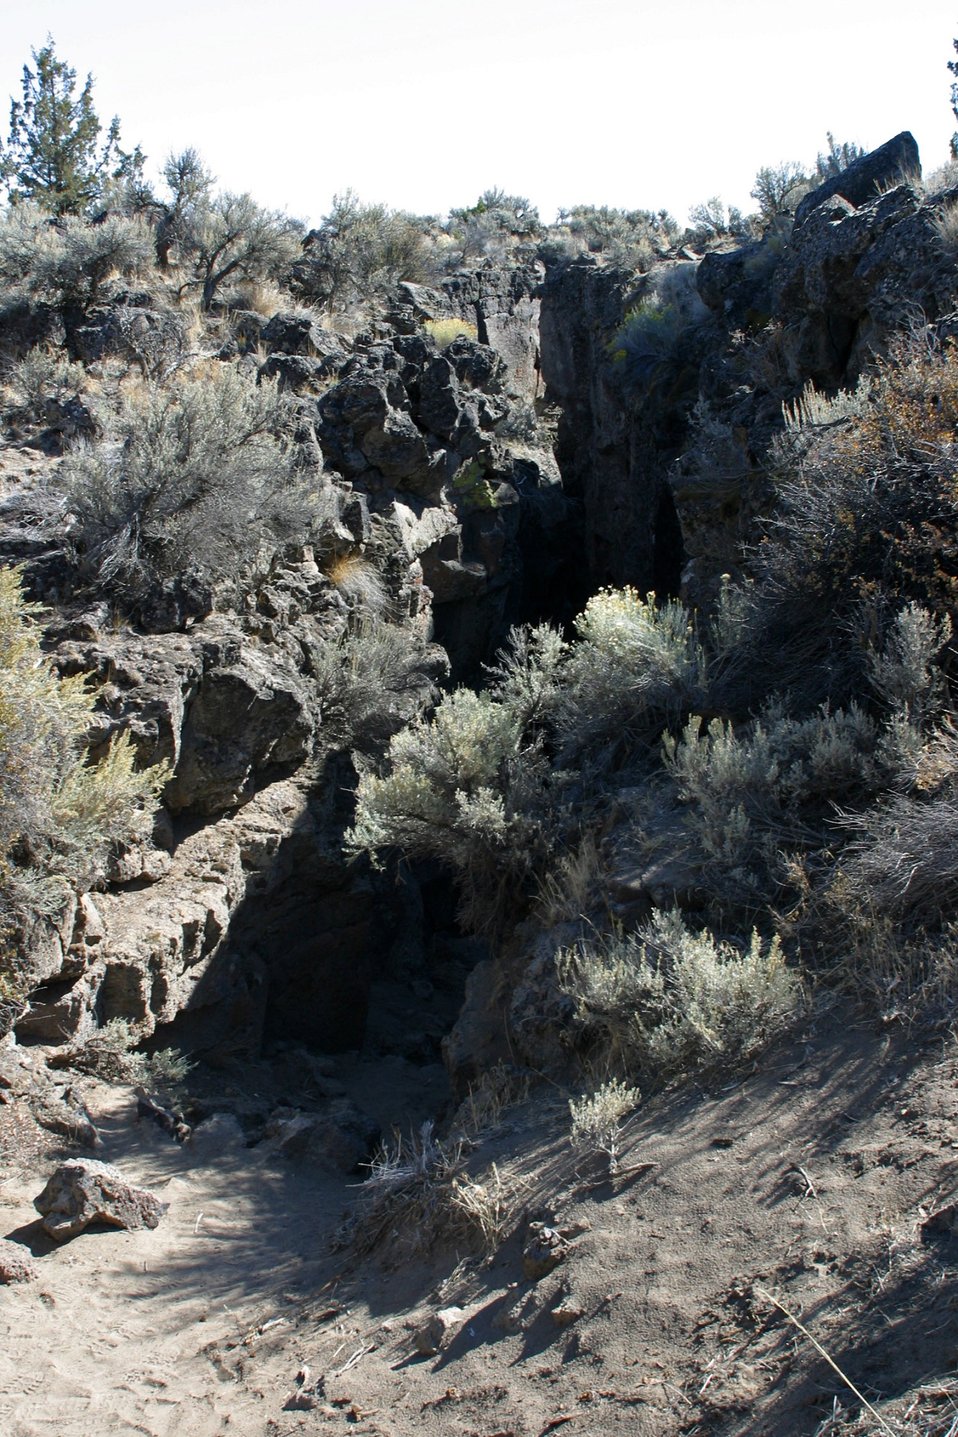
Entrance to Crack-in-the-Ground on the Lakeview District.